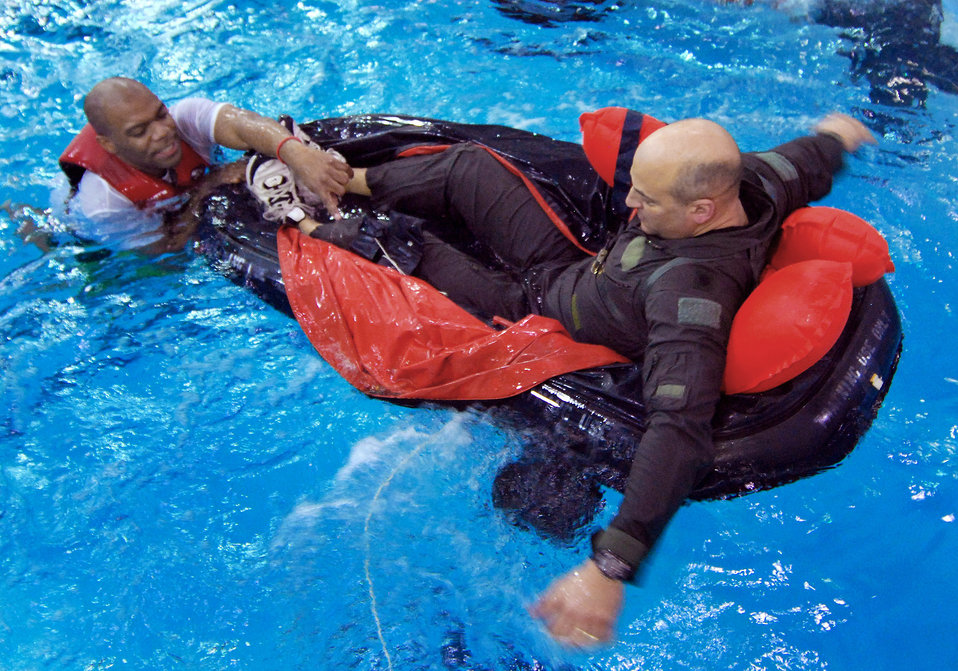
Water survival training

Tech Sgt. Preston Caldwell (left) assists Lt. Col. David Re with an aircrew survival raft during water survival training Feb. 4, 2011, at the Cobb Aquatic Center in Marietta, Ga. Sergeant Caldwell is an aircrew flight equipment continuation instructor. Colonel Re is a C-130 Hercules pilot.